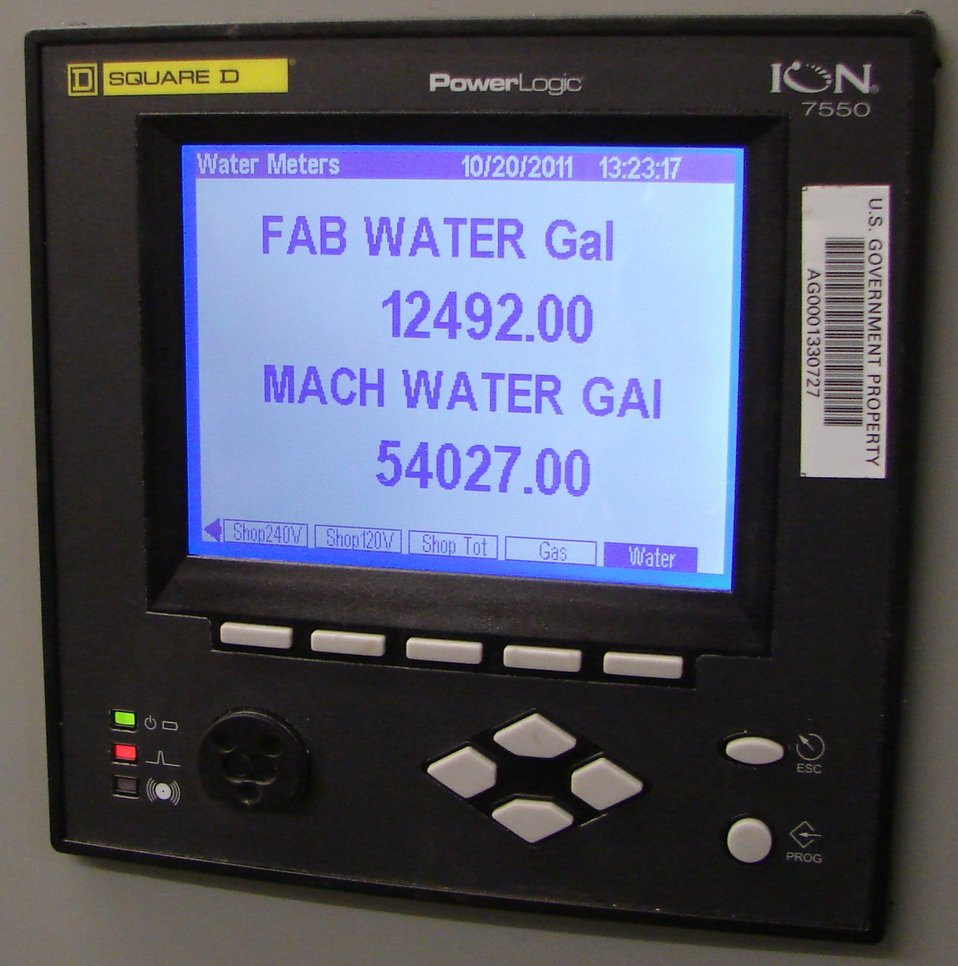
ShopMain screen

The U.S. Forest Service is making strides in monitoring energy and water consumption at several of the Agency’s facilities by installing software called the Advanced Metering Program, which accurately reports water and energy consumption.